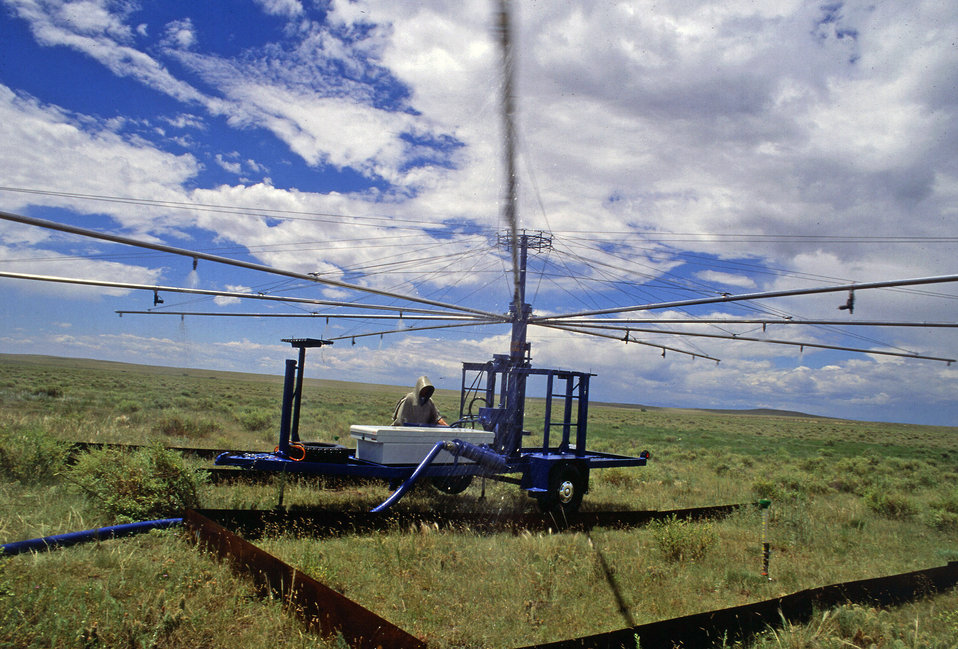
U.S. Department of Agriculture (USDA) Agricultural Research Service (ARS) hydraulic engineer Gary Frasier operates a rotating boom rainfall simulator and gathers data on soil infiltration and water runoff from the under spray.